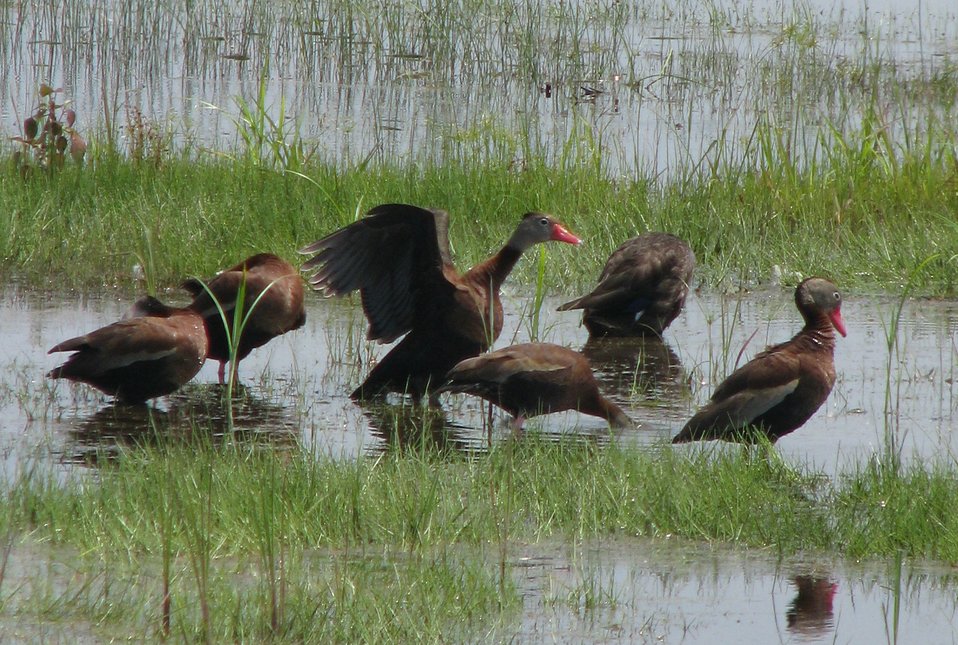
Black-bellied Whistling Ducks (Dendrocygna autumnalis) on the Wildlife Drive at Edwin B. Forsythe NWR